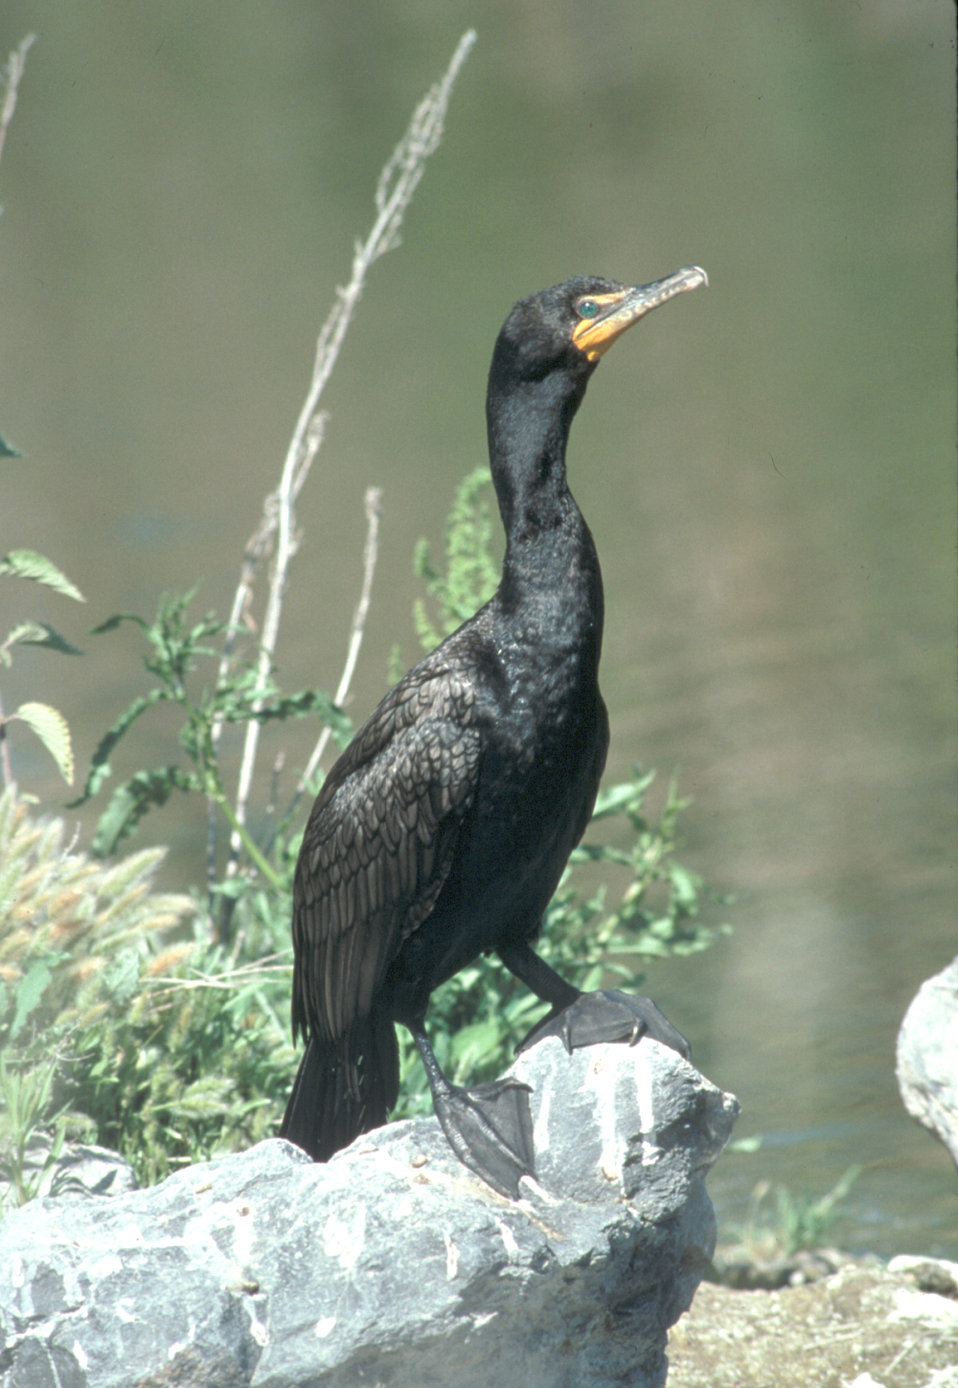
Double-crested Cormorant

The double-crested cormorant is just one of the species at Blackwater National Wildlife Refuge that could be affected by climate change and sea level rise.